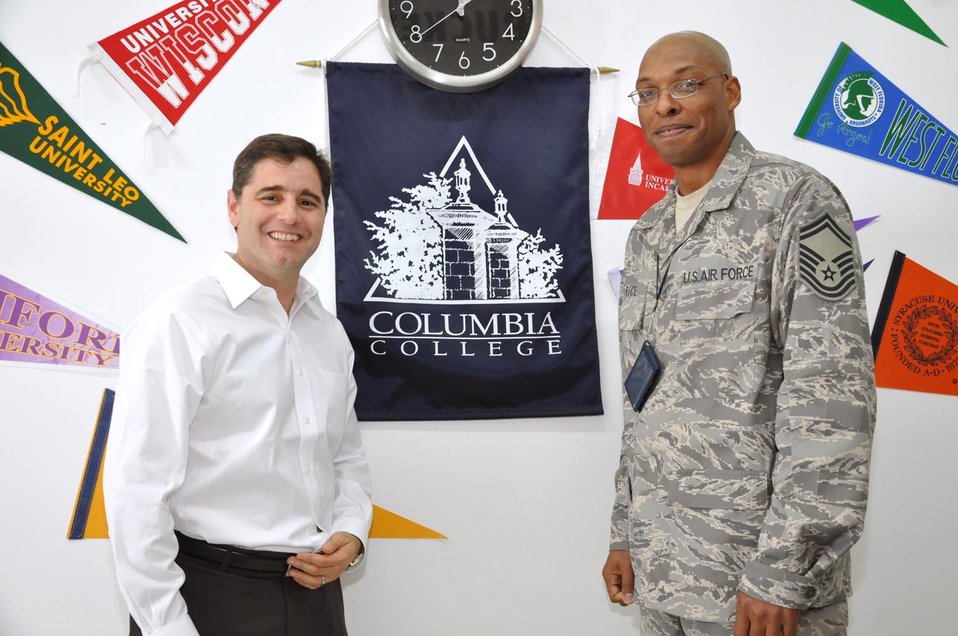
Chairman Genachowski visits with U.S. soldiers